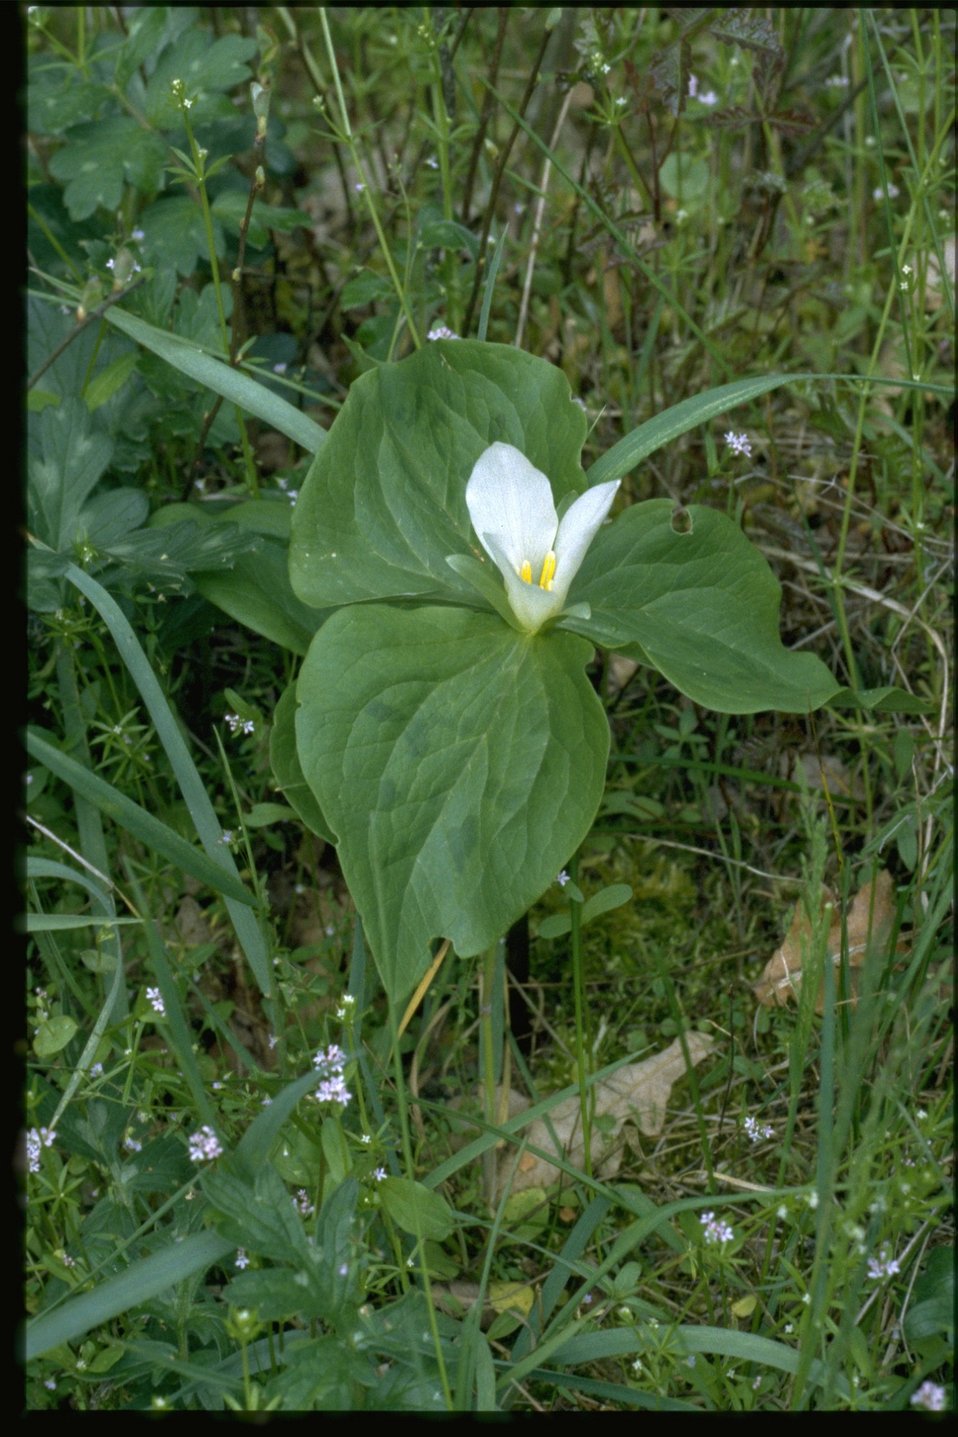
Medium shot of Trillium albidum.